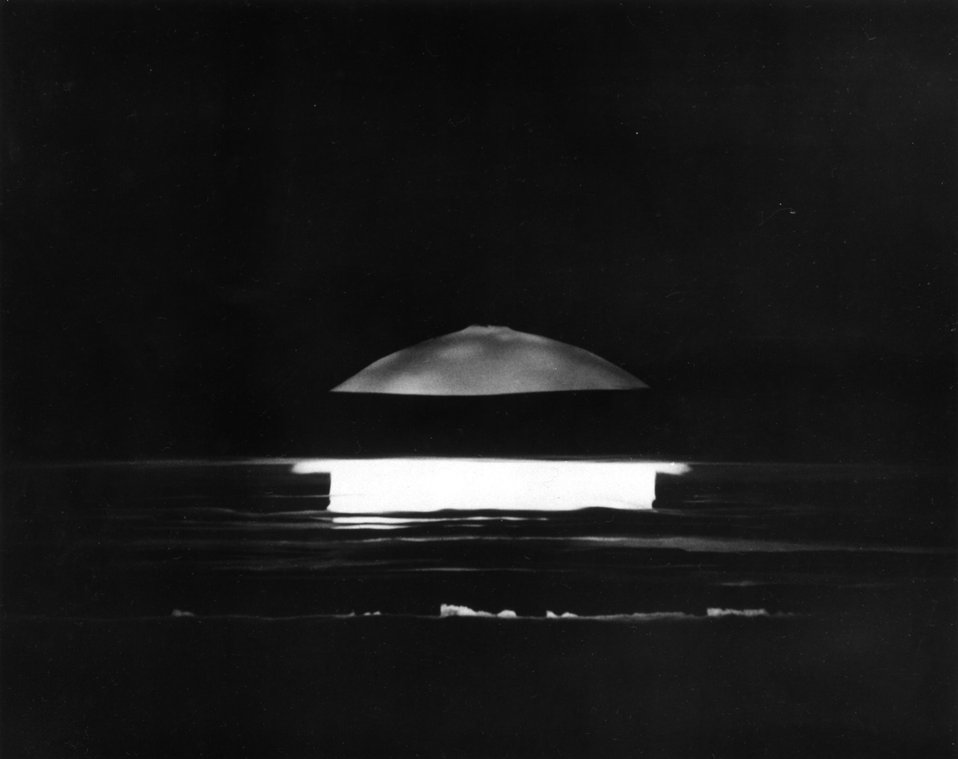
Fireball of May 21, 1956 test detonation over Bikini Atoll.